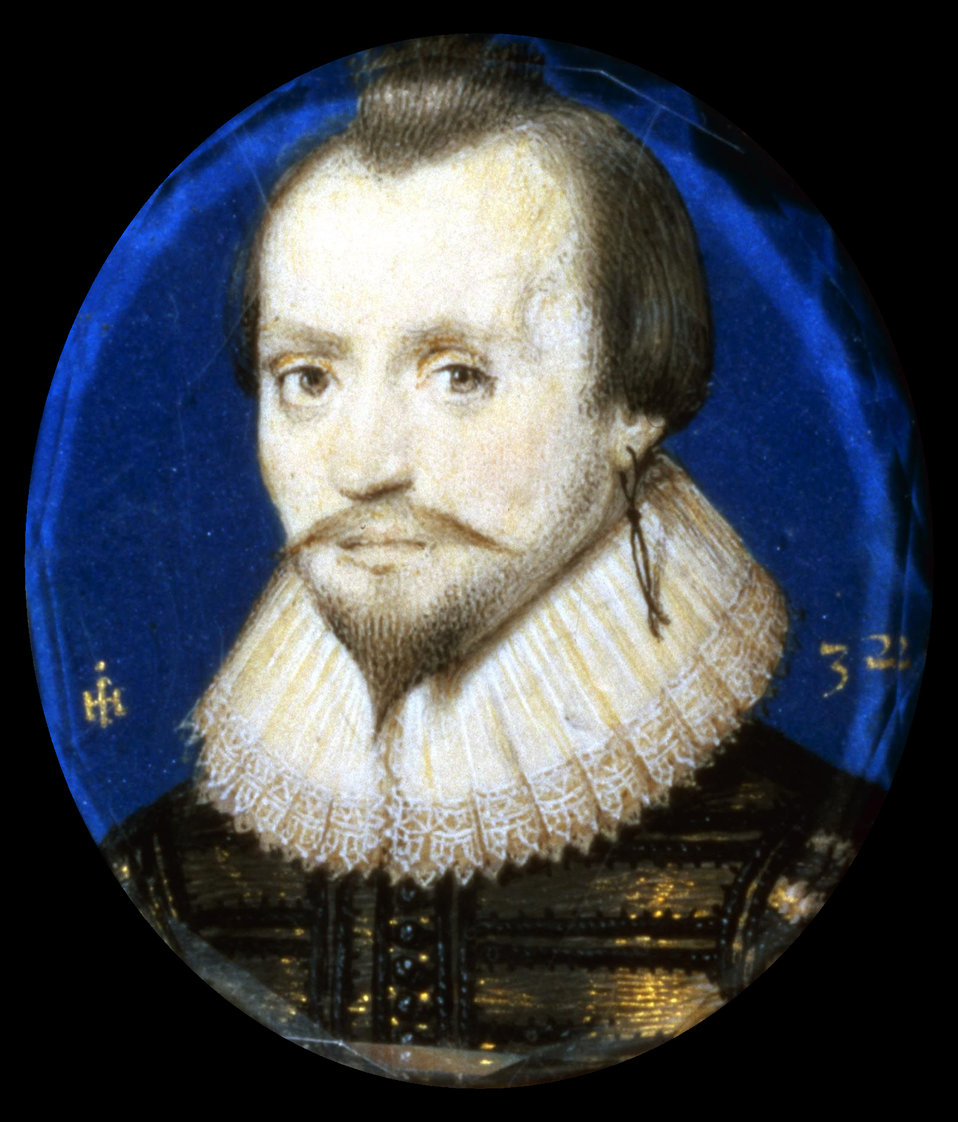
Portrait of a Gentleman) by John Hoskins